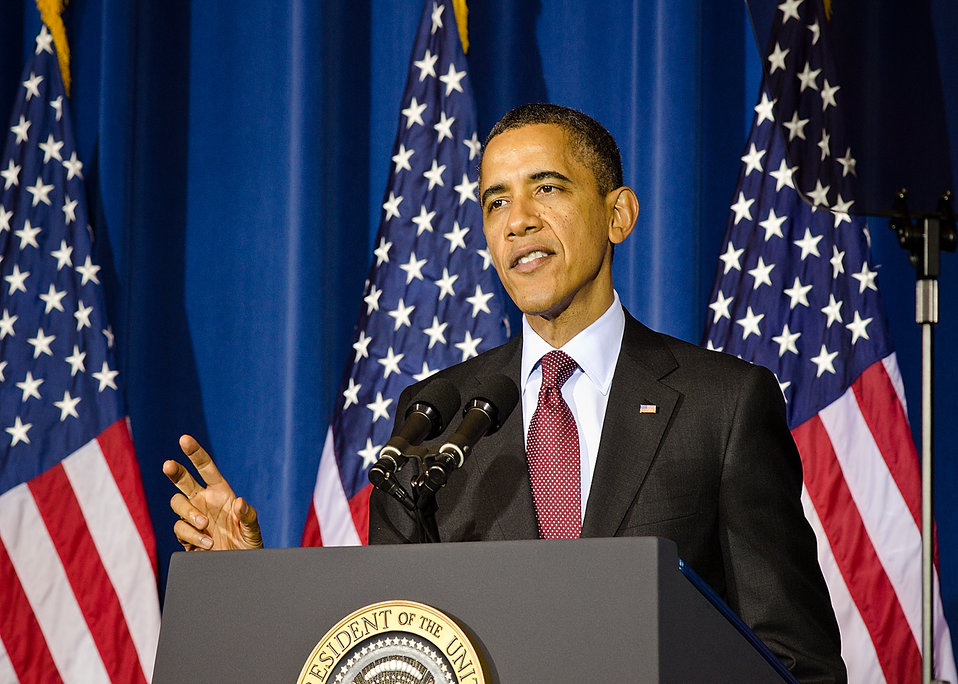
President Barack Obama addressed the audience at the White House Conservation Conference, “Growing America’s Outdoor Heritage and Economy” at the Interior Department, Yates Auditorium in Washington, D.C., on Friday, March 2, 2012 The conference is part of President Obama’s, “America’s Great Outdoors Initiative” to spotlight community-driven conservation efforts and discussed how to build their success.